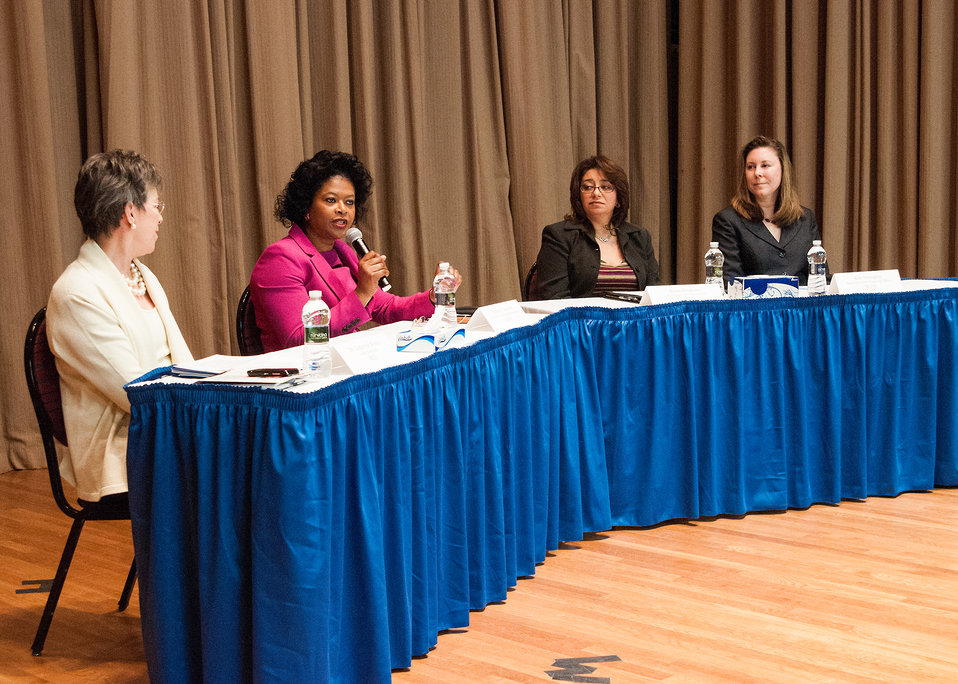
(L to R) Agriculture Under Secretary, Research, Education and Economics (REE) Dr. Katherine Wotecki, U.S. Department of Agriculture (USDA) Associate Chief Information Officer (Technology) Ms. Yvonne Jackson, USDA Rural Development (RD) Rural Utilities Service (Engineering) Assistant Administrator Ms. Nivin Elgohary, and USDA Associate Chief Financial Officer (Mathematics) Ms. Kim Farington chair a panel during the USDA ‘s Office of the Chief Information Officer (OCIO) National Women’s History Month celebration at the USDA Jefferson Auditorium in Washington, D.C. on Thursday, Mar. 14, 2013. The theme of this year’s celebration is, “Recognizing American Women’s Outstanding Contributions to the Field of Science, Technology, Engineering and Mathematics,” commonly referred to as STEM.